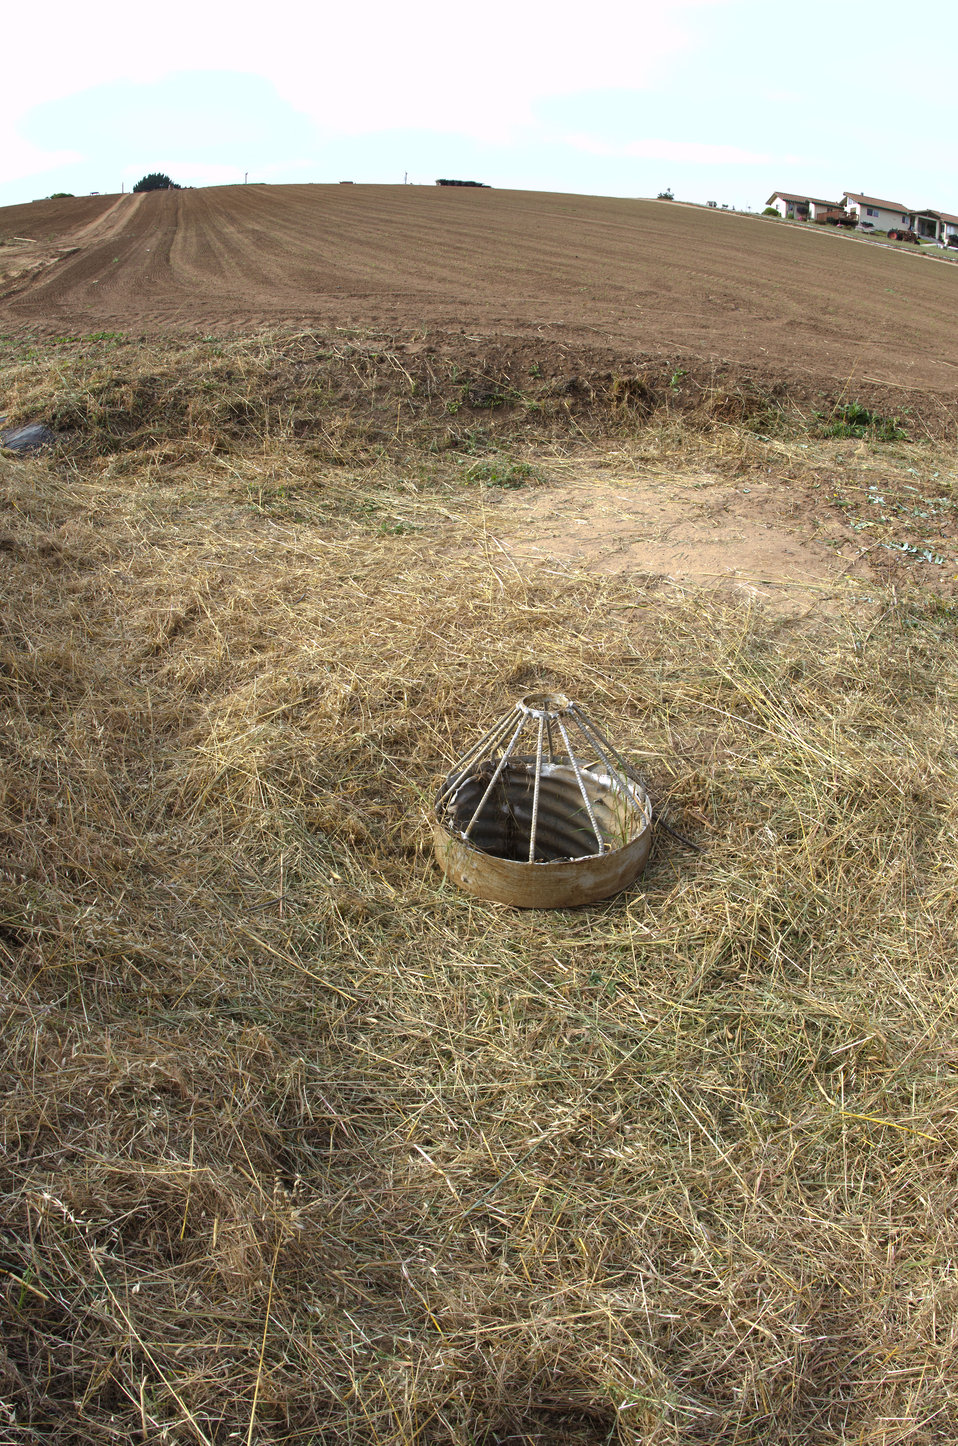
A sediment pond and drainpipe at the low end of a strawberry farm field near Castroville, CA, on Thursday, June 16, 2011. When seasonal rains produce runoff, the silt that flows with it is caught in sediment basins. The basins have fast growing plants to hold the structure and a raised drainpipe that allows the water to pool and silt to settle. The farm is within sight of the Monterey Bay National Marine Sanctuary, it is important that silt does not reach the ocean waters. The grass has been trimmed down to show the contour and design of the basin during this dry time of the year. The roots are alive and the plants will grow back.